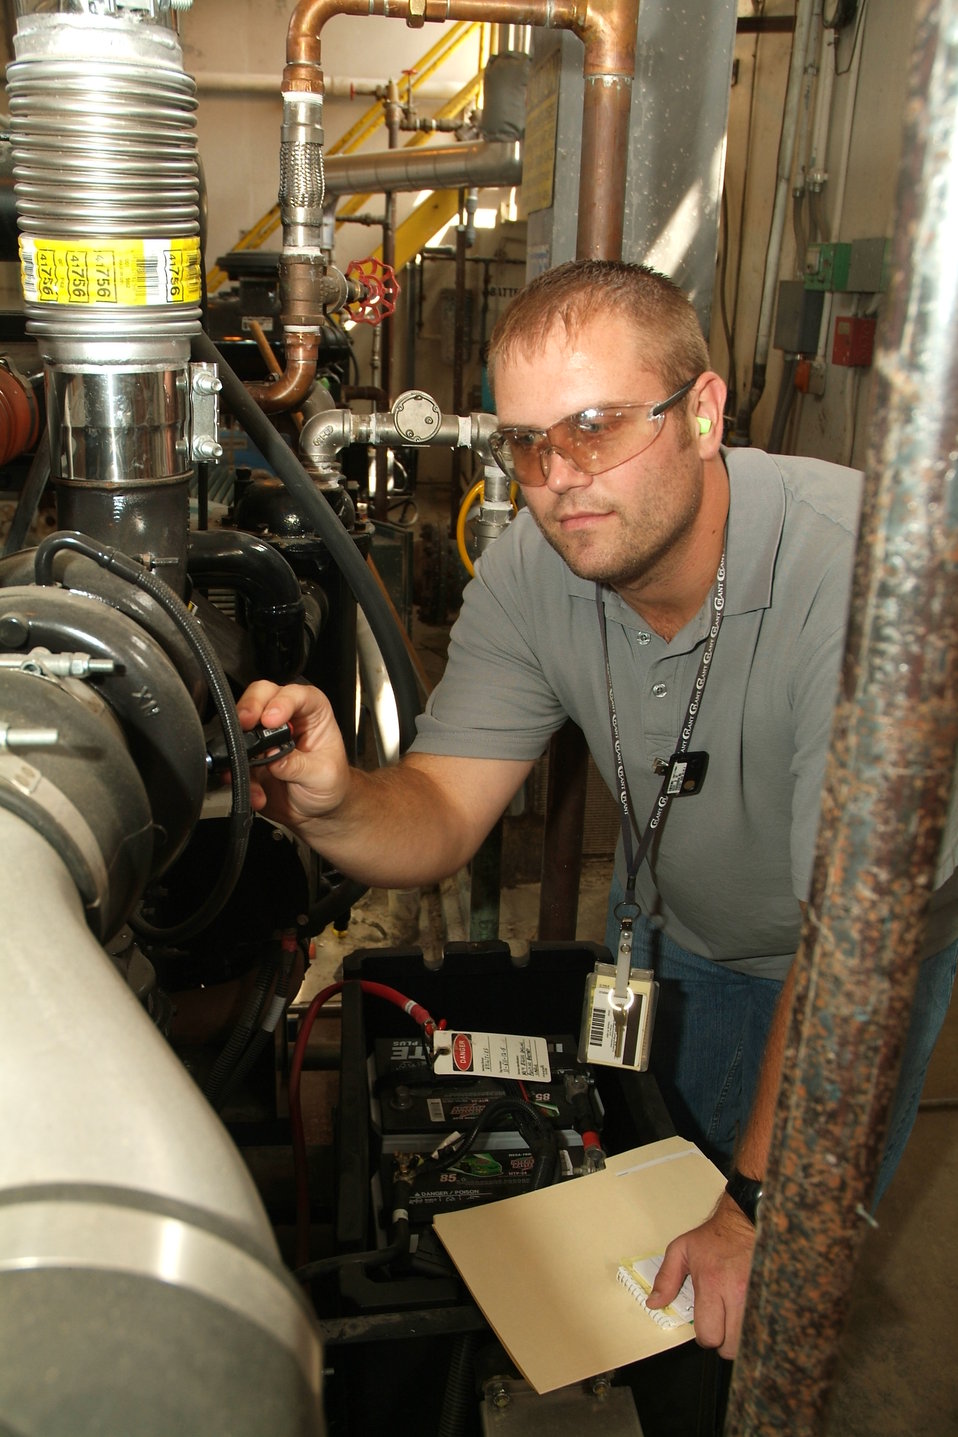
Photo 1 for Paducah Story 1

Brandon Henderson checks a pump in the water treatment facility at the Paducah Gaseous Diffusion Plant. The former Recovery Act engineer now works for the U.S. Enrichment Corp.